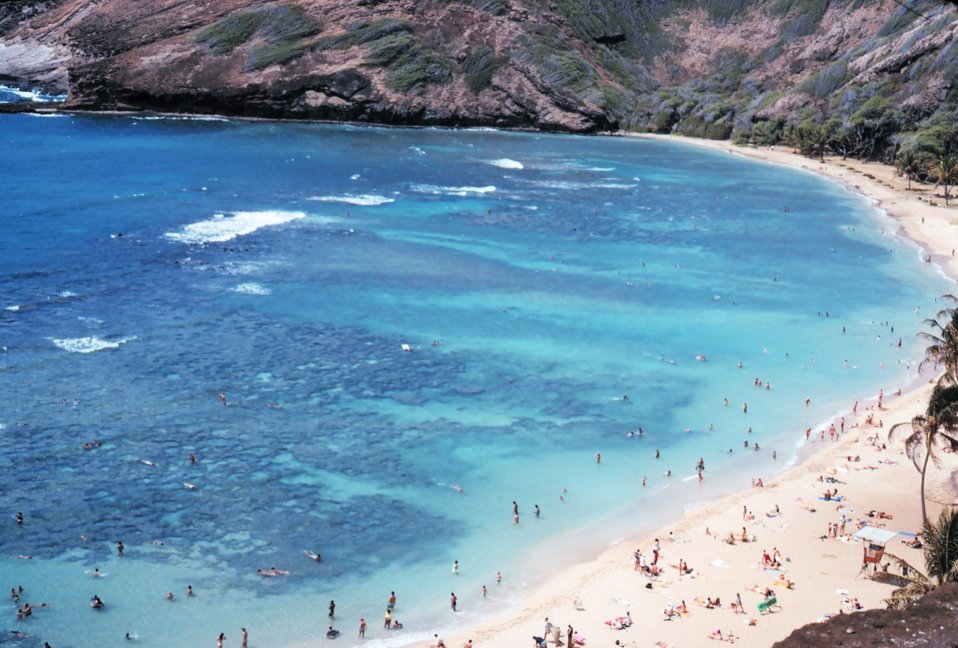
Hanauma Bay, a breached volcanic crater